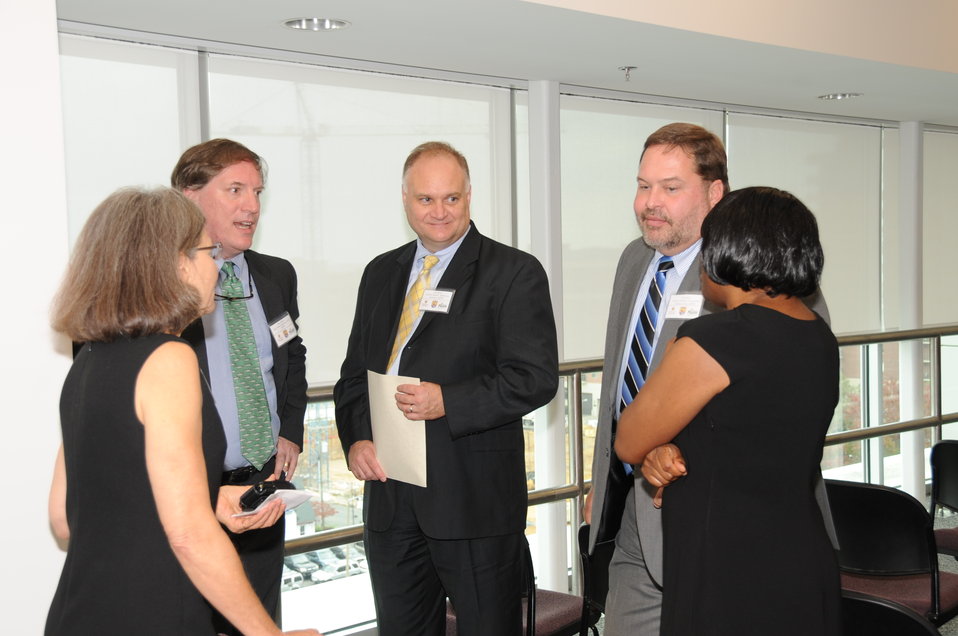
Together in Conservation

Memorandum of Understanding Signing Ceremony with U.S. Fish and Wildlife Service, Smithsonian Institution, and George Mason University. October 26, 2012